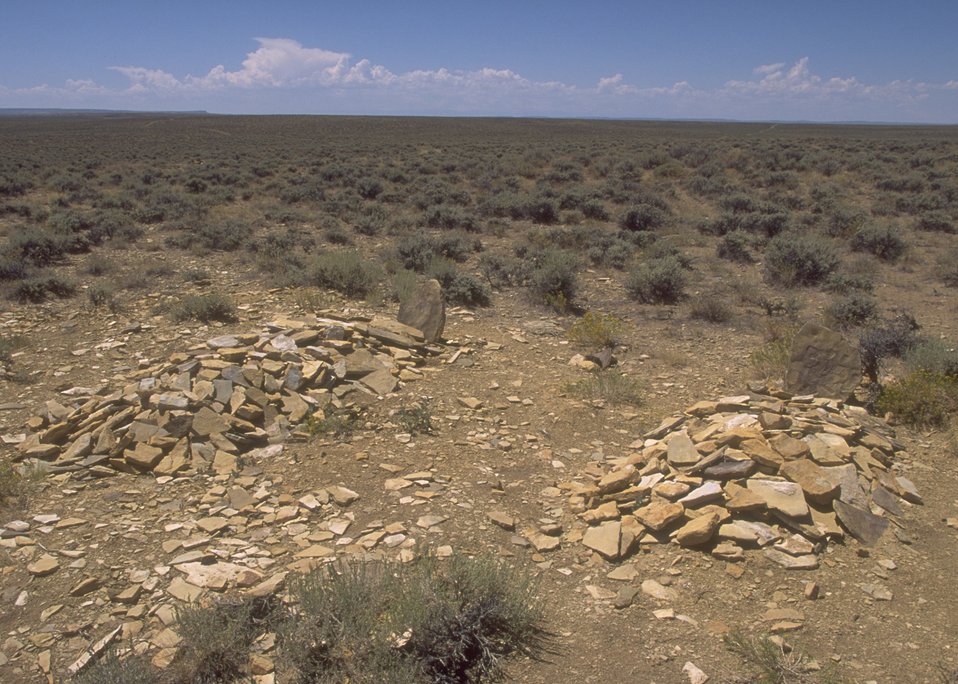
Location of original grave sites (remains have been relocated) at the Indian Emigrant relations interpretive area along the Oregon Trail, Rock Springs Field Office.